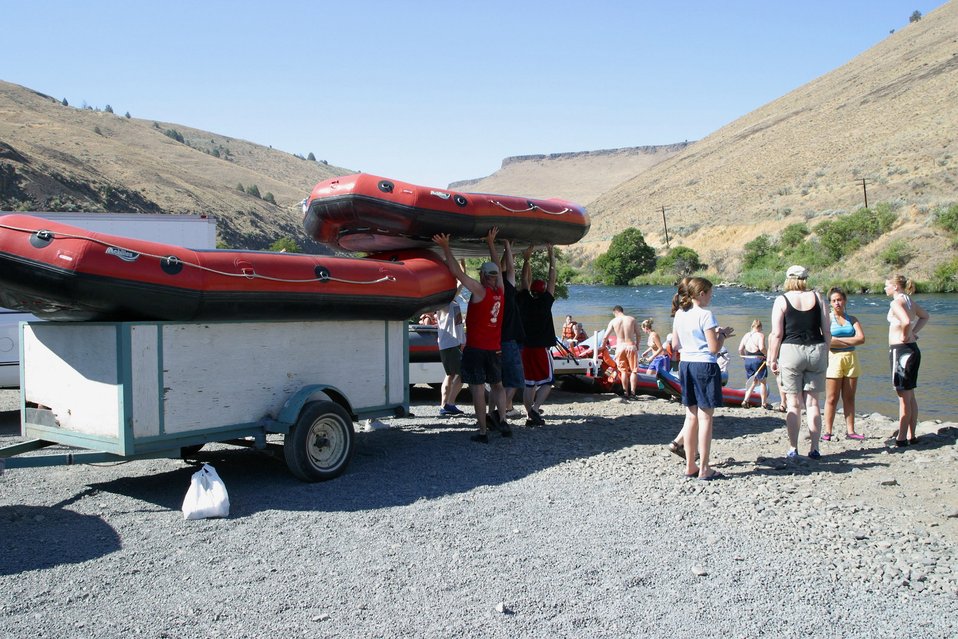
Individual rafters use Harpham Flat boat ramp along with commercial operators.